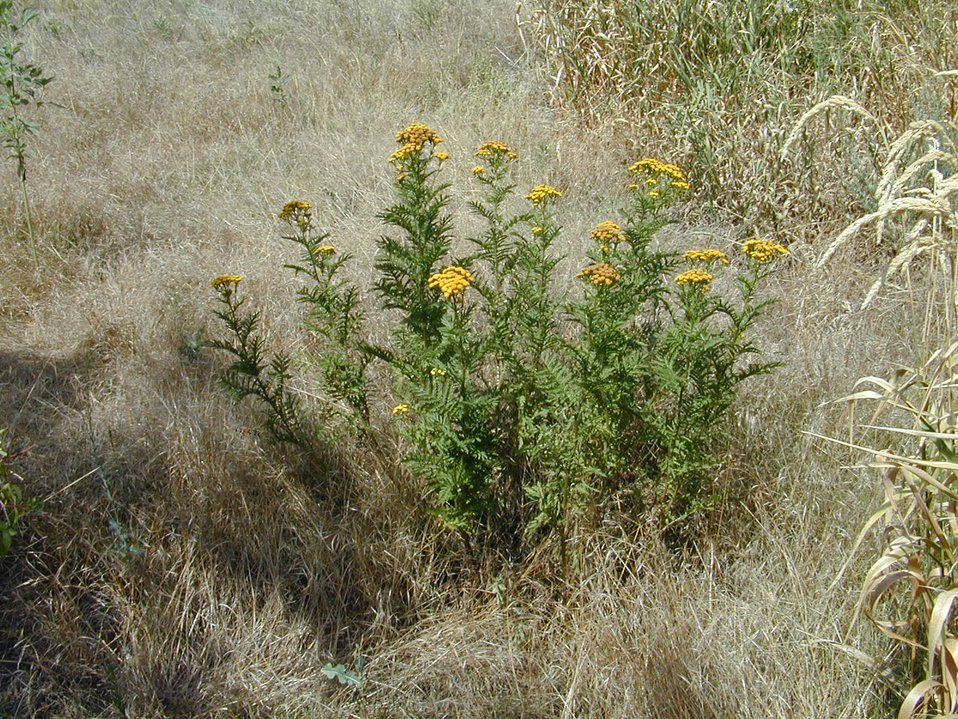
Golden Rod Cottonwood Field Office UCSC Upper Columbia Salmon Clearwater District